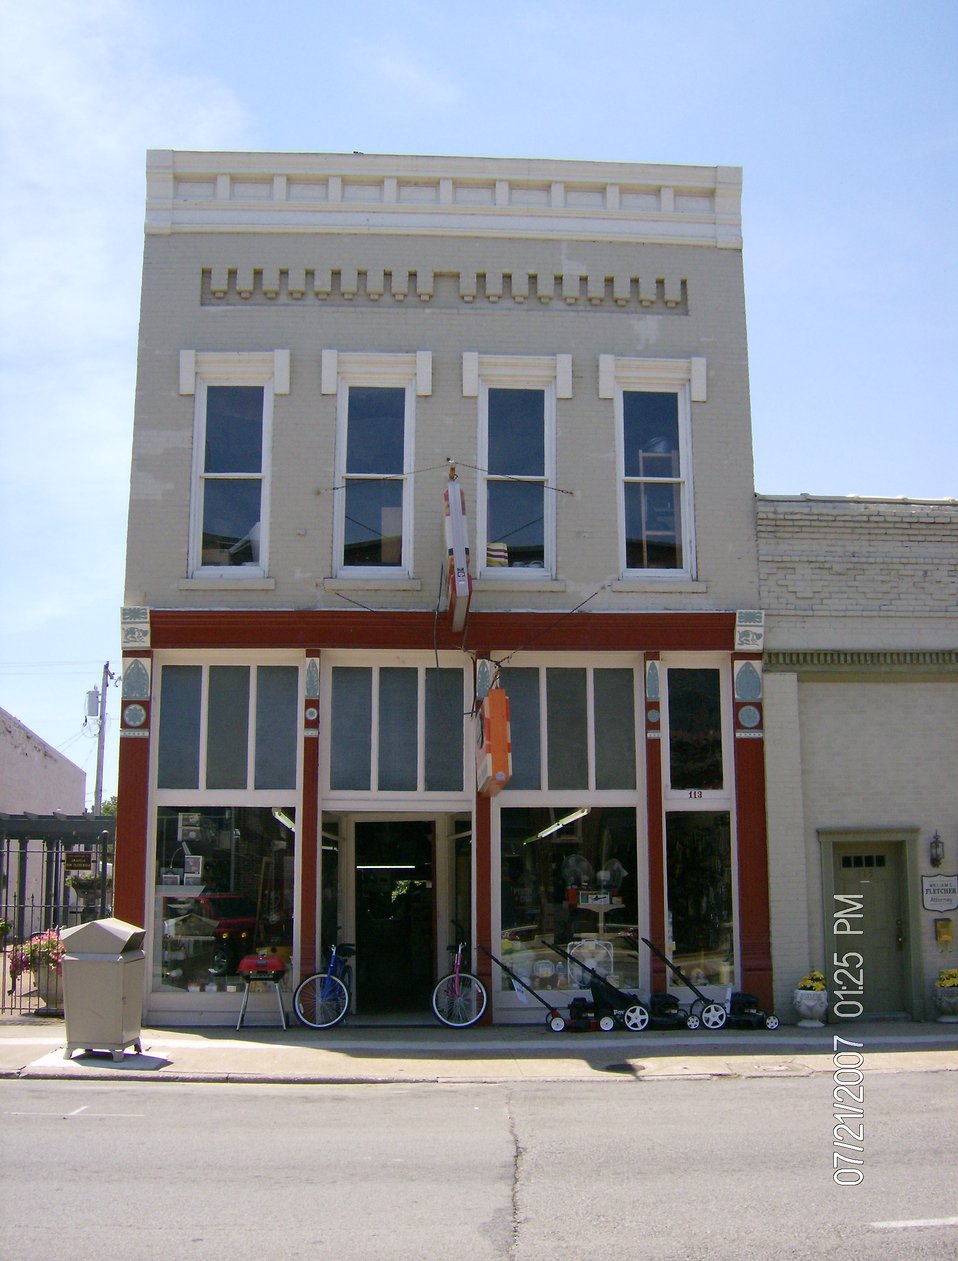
This is 113 West Main Street in Princeton, KY. It was originally built in 1879 and is on the National Register of Historic Places.